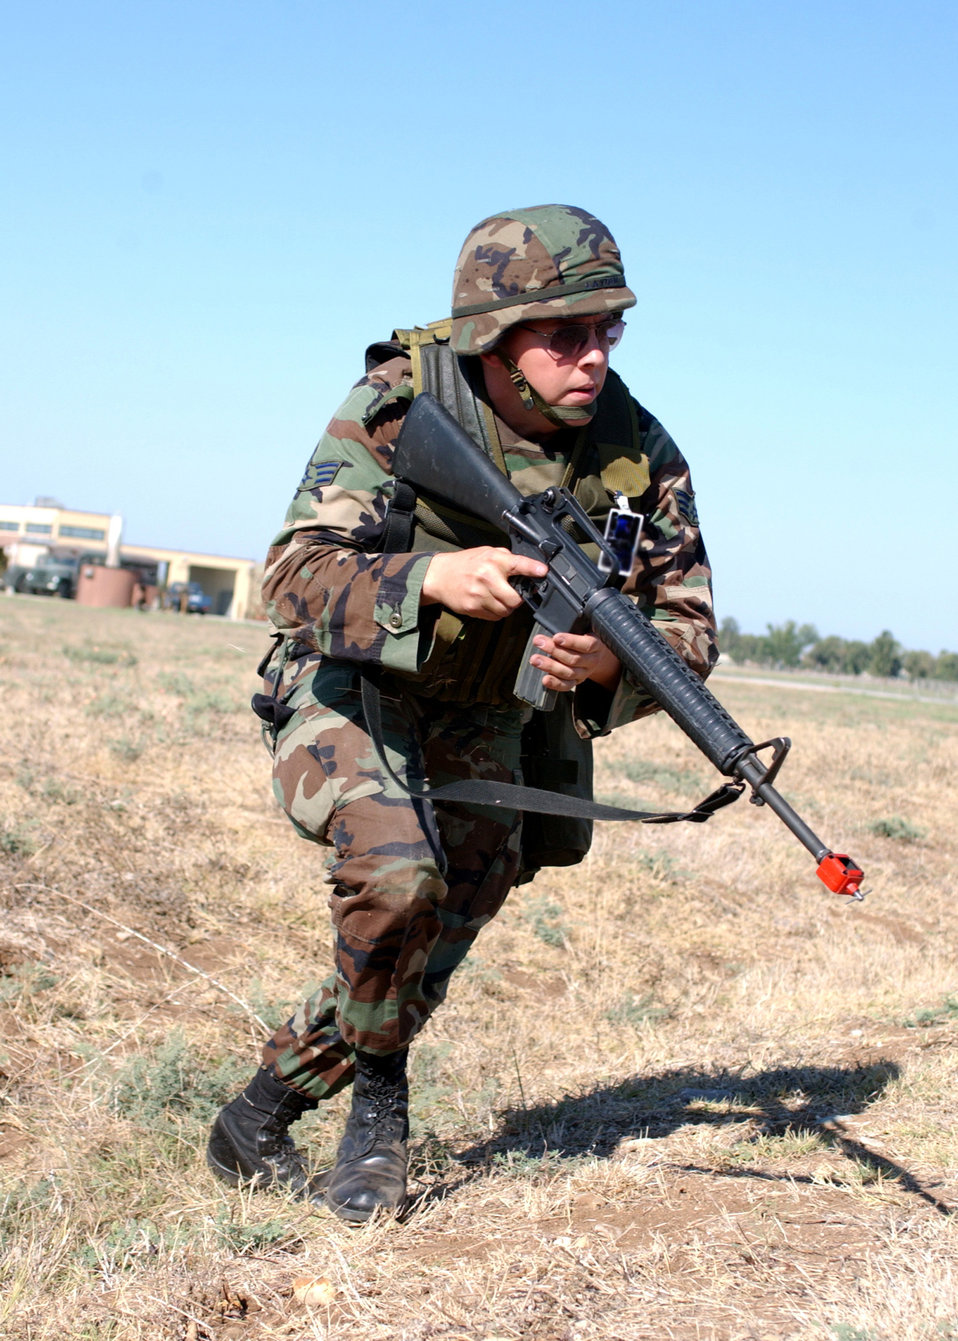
Charge

INCIRLIK AIR BASE, Turkey -- Senior Airman Loramar charges forward towards enemy fire during an exercise here Sept. 7. Airman Loramar is assigned to the 39th Security Forces Squadron.